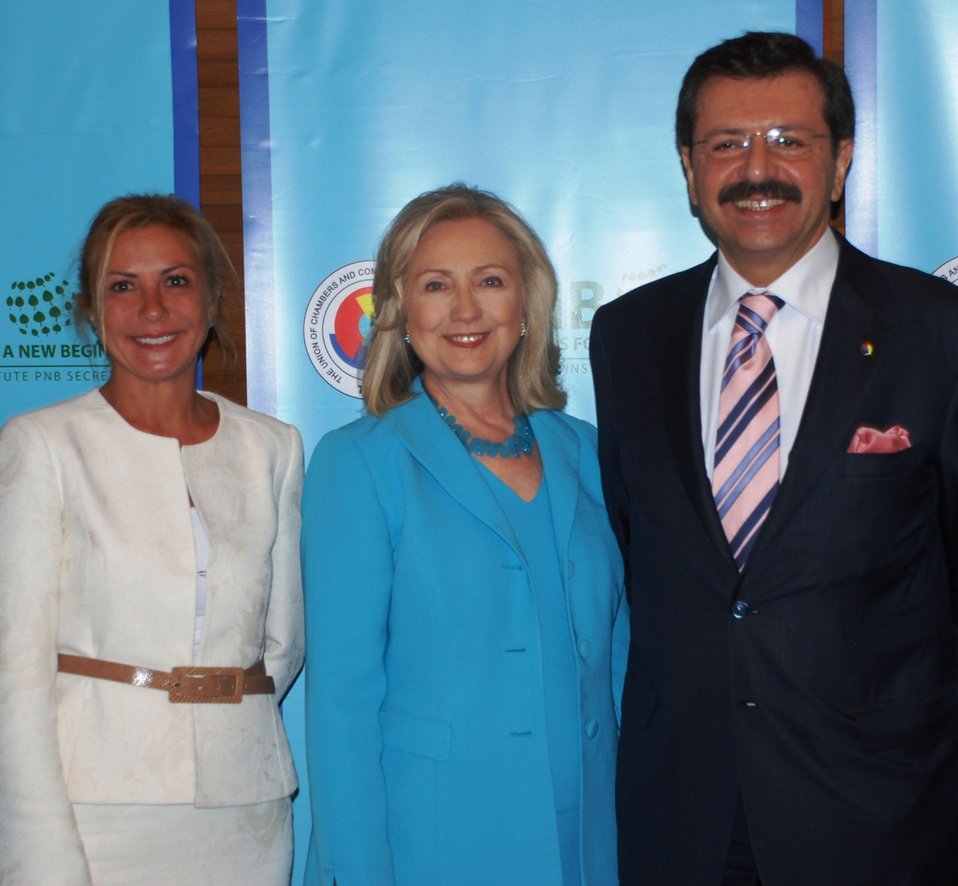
Secretary Clinton Poses for a Photo With Umit Boyner and Rifat Hisarcıklıoğlu

U.S. Secretary of State Hillary Rodham Clinton, center; poses for a photo with participants in the Partners for a New Beginning (PNB) Initiative meeting, including Ümit Boyner, President of the Turkish Industrialists' and Businessmen's Association (TUSIAD), left; and RÄ±fat HisarcÄ±klÄ±oğlu, Chairman of the Union of Chambers and Commodity Exchanges of Turkey (TOBB), right; in Istanbul, Turkey, on July 16, 2011.